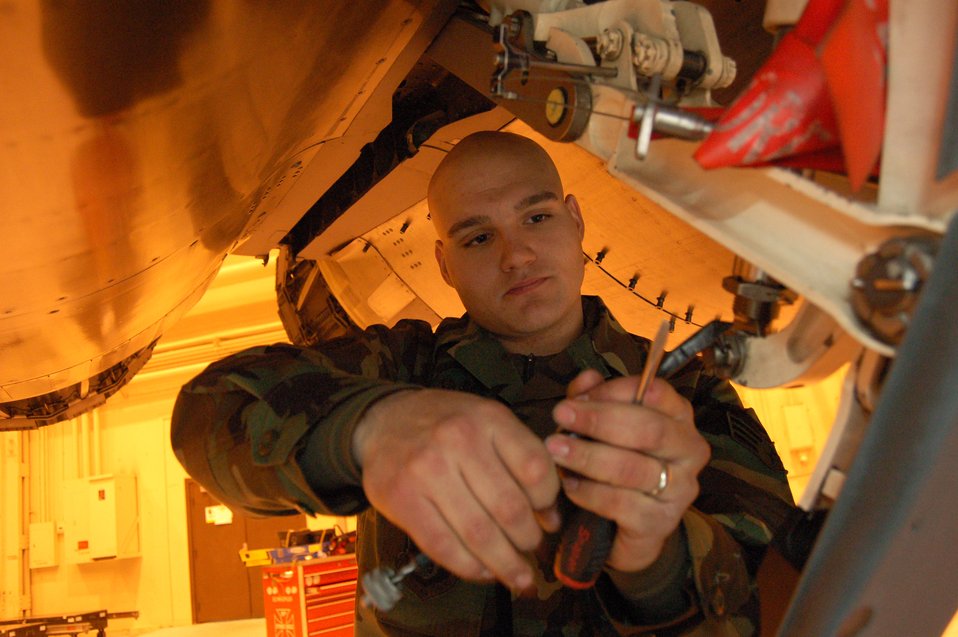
Elmendorf Airmen put AFSO 21 to work

Senior Airman Scott Rodrigues removes the tail hook dampener Feb. 22 at Elmendorf Air Force Base, Alaska. Airman Rodrigues is removing the F-15E Strike Eagle dampener during an aircraft transfer inspection at Elmendorf AFB. The aircraft transfer inspection was changed at Elmendorf AFB after being evaluated using Force Smart Operations for the 21st century. Instead of taking 10 days, the inspection is now complete in three. Airman Rodrigues is an assistant crew chief with the 90th Fighter Squadron.